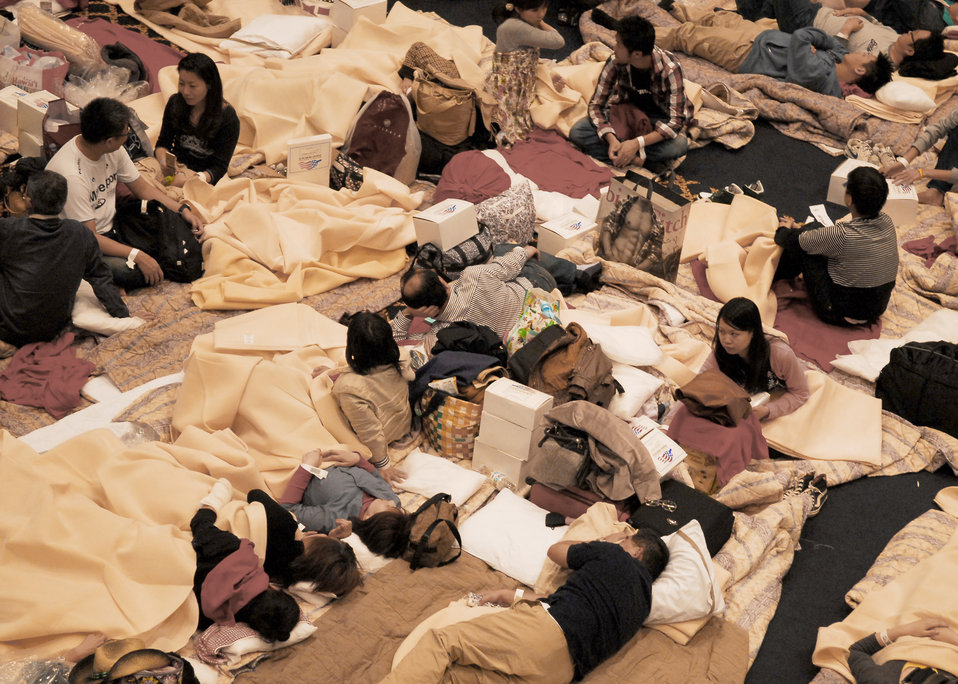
Taking shelter

Passengers of a commercial airline flight take shelter March 11, 2011, at Yokota Air Base, Japan. Base officials there provided food and shelter to passengers of aircraft diverted from Narita International Airport in Tokyo, due to an 8.9-magnitude earthquake.